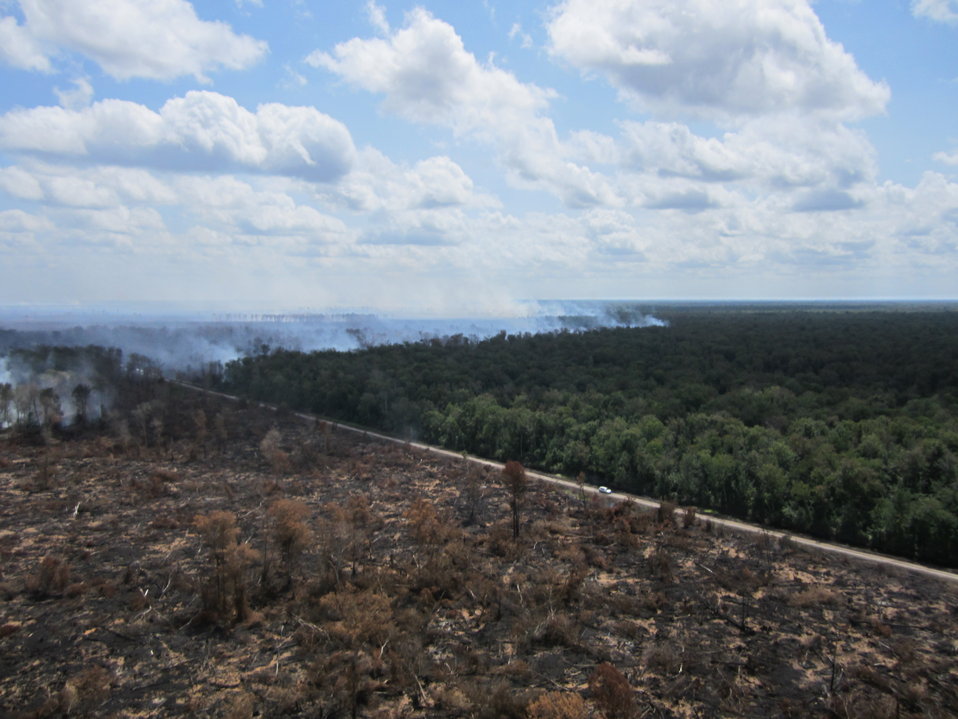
Burned and unburned

Suffolk, VA, August 2011: An aerial view reveals how a road ditch helped stop the progression of the Lateral West Fire in Great Dismal Swamp.